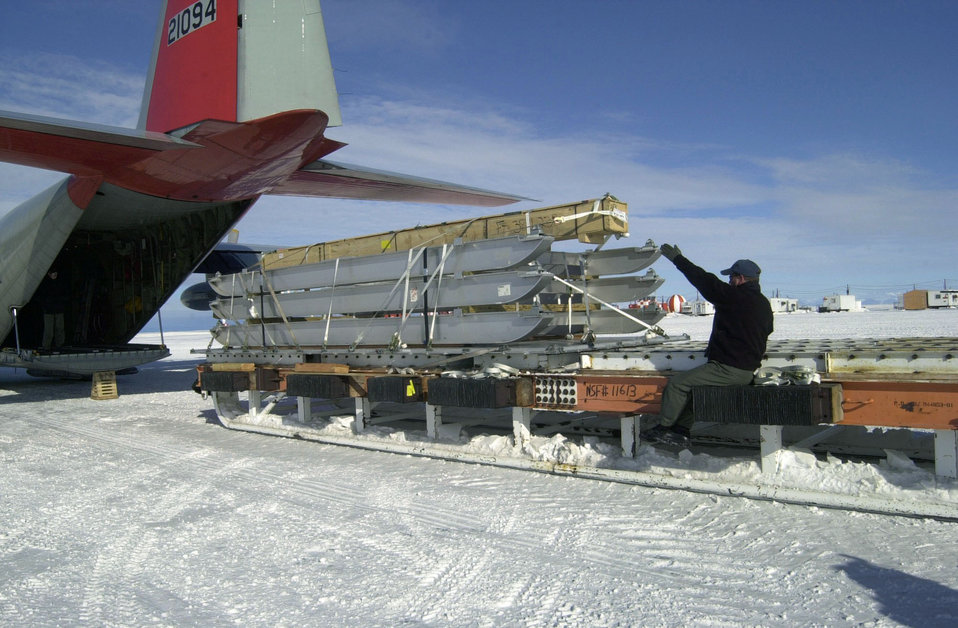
ANG heads to Antarctica

Master Sgt. Carmello Modesto loads equipment sleds destined for the U.S. Antarctic Program's South Pole research station into the back of an LC-130 Hercules at McMurdo Station, Antarctica, Nov. 30, 2004.